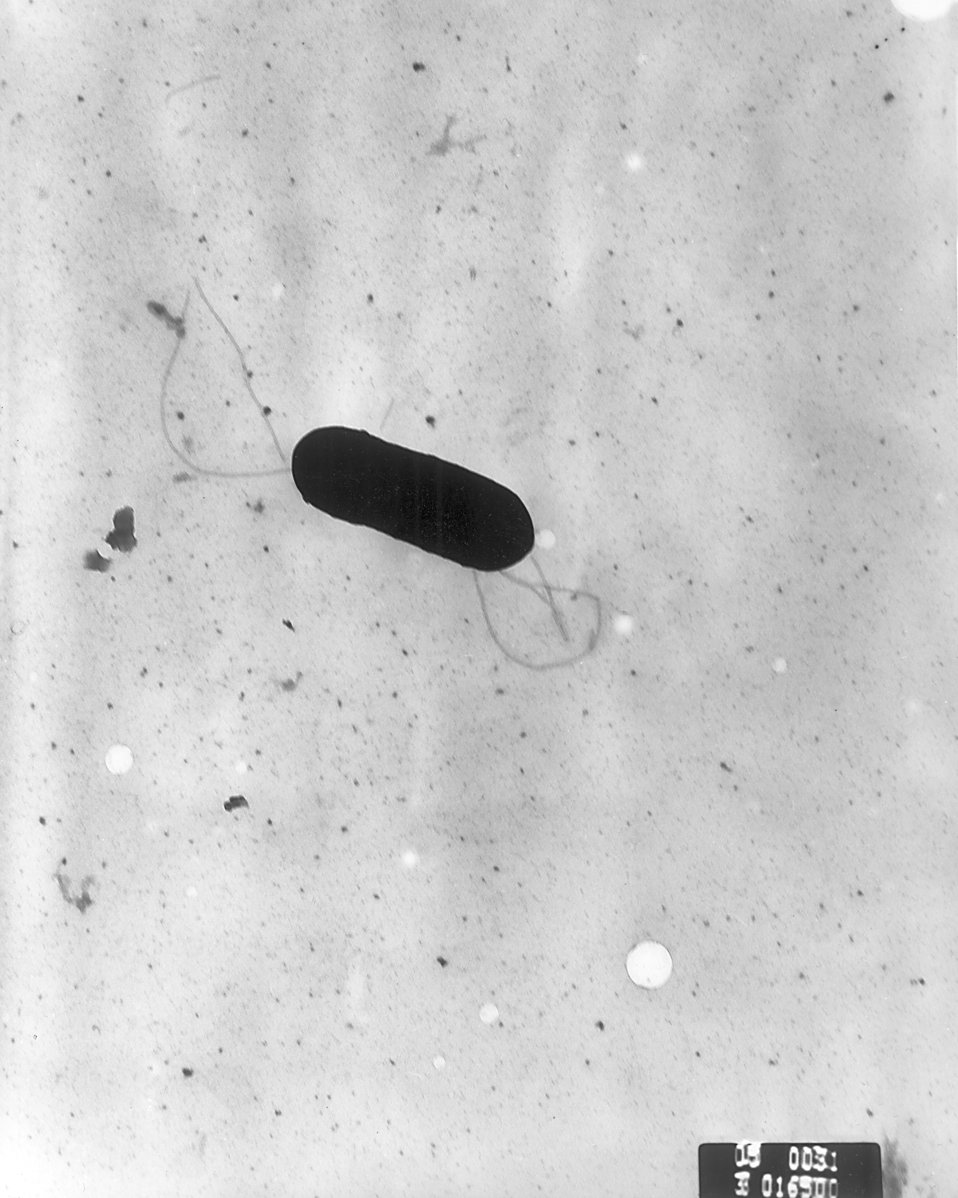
Electron micrograph of a flagellated Listeria monocytogenes bacterium, Magnified 41,250X.